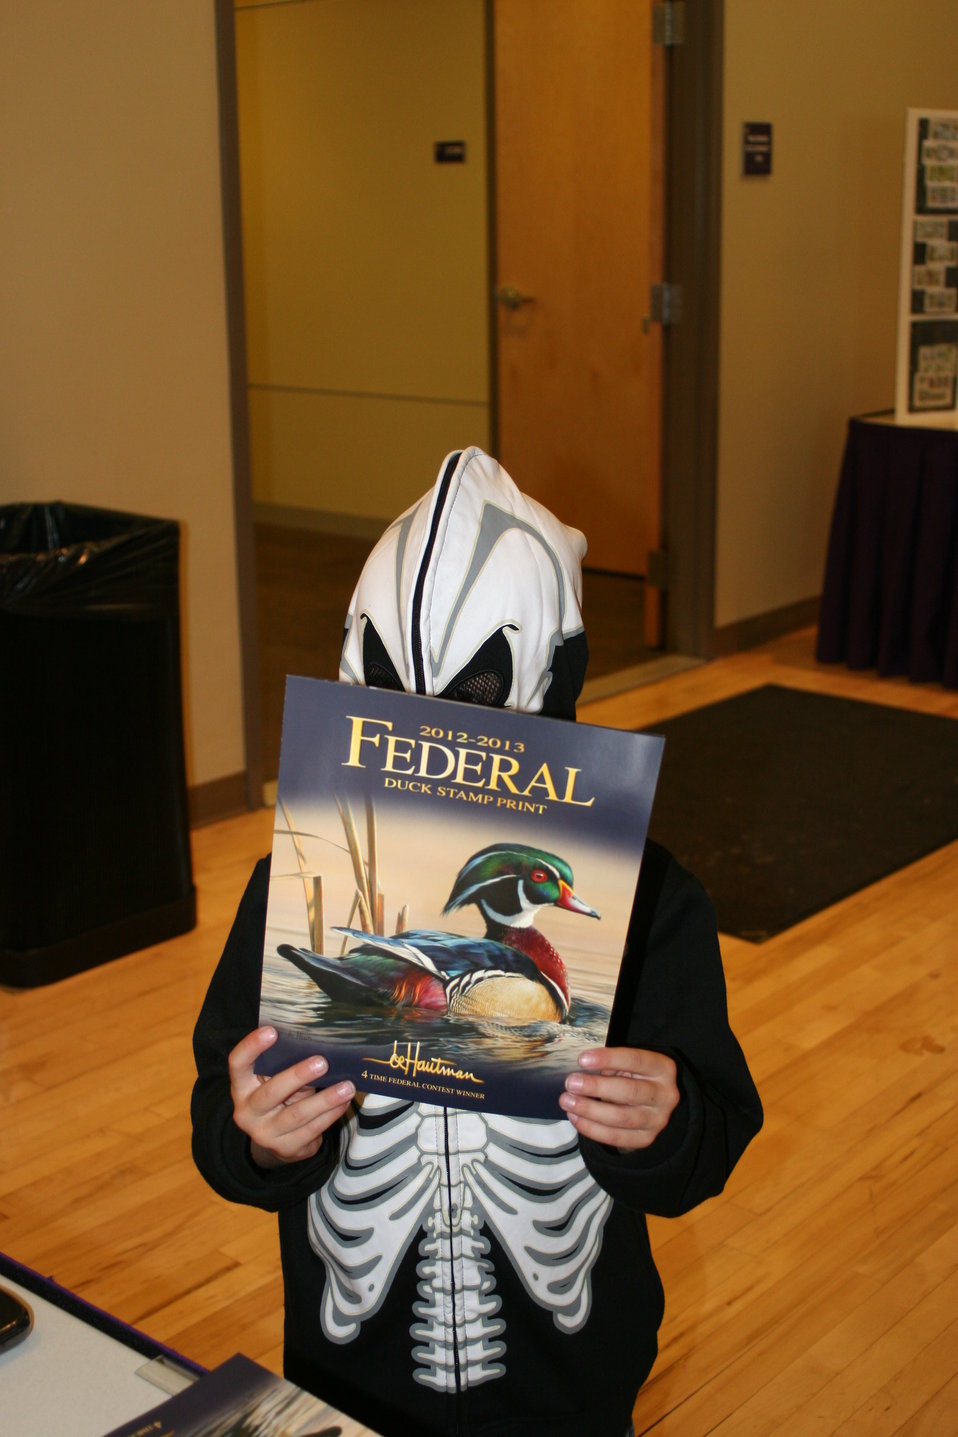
Even Skeletons Love Duck Stamps

Photo Credit: Suzanne Fellows / USFWS
The U.S. Fish & Wildlife Service sponsored the 2012 Federal Duck Stamp Art Contest September 28 and 29 in Ogden, Utah, at Weber State University. A panel of five judges was responsible for choosing the art work used to design the 2013-2014 Migratory Bird Hunting and Conservation Stamp.